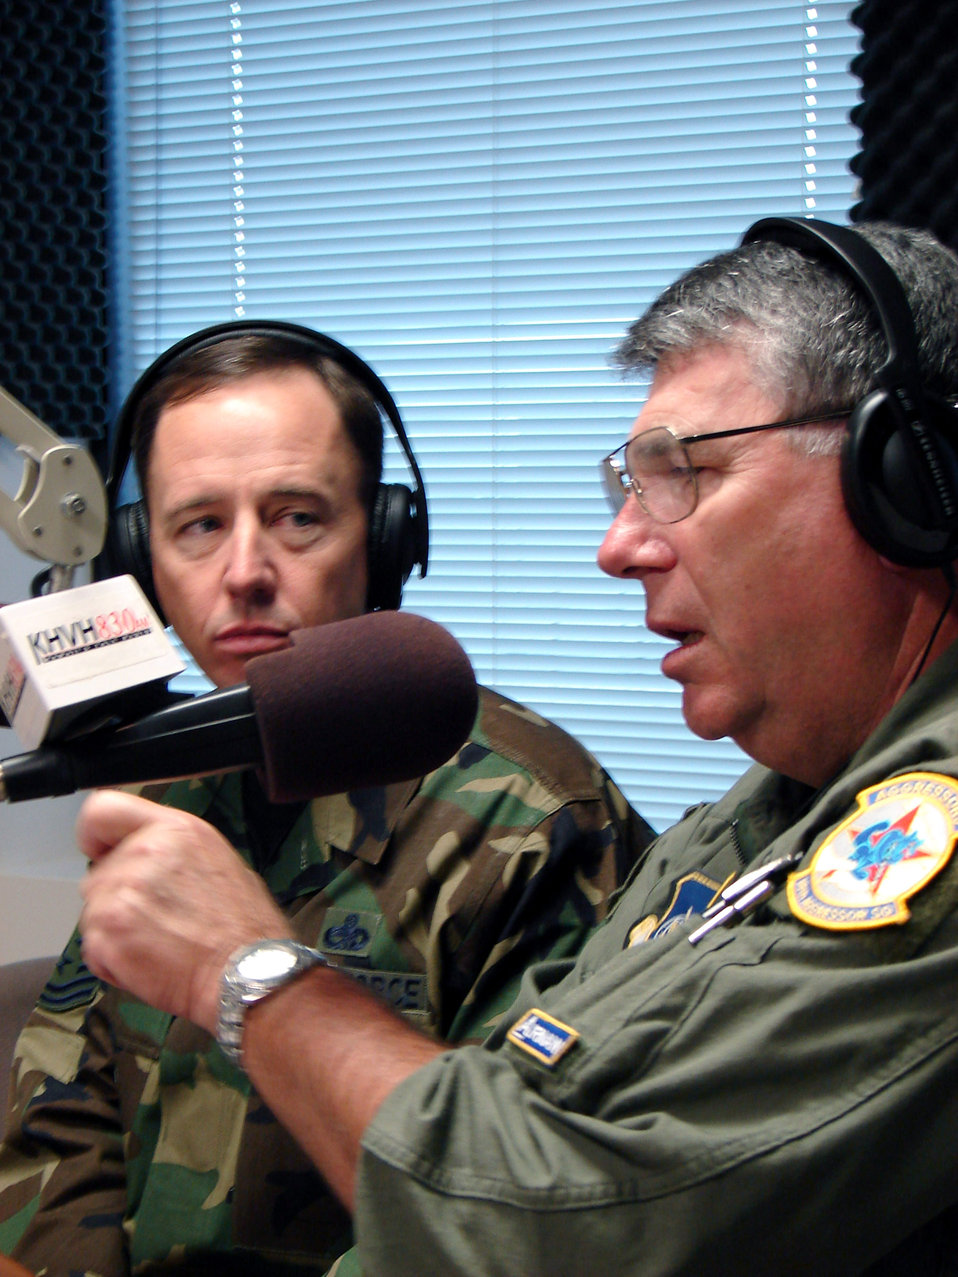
Airmen tell Air Force story over Hawaiian airwaves

Live on KHVH AM 830, Gen. Paul V. Hester, commander of Pacific Air Forces, (right) and Chief Master Sgt. Tony Bishop, command chief master sergeant of PACAF, share stories to Hawaii listeners May 7 about the Air Force, PACAF and deployments.